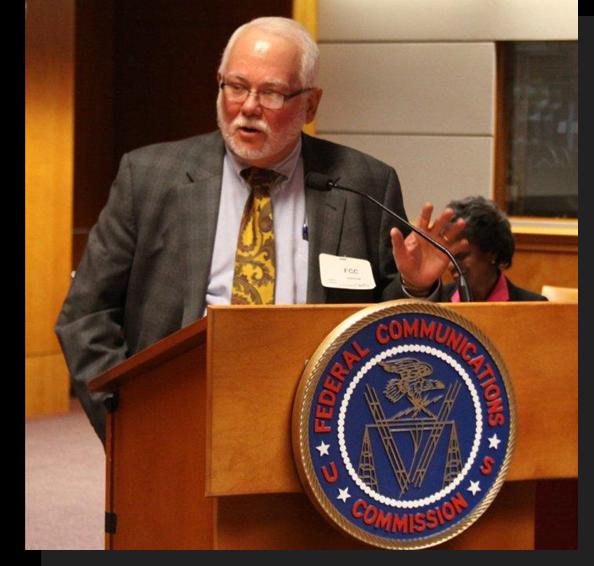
Commissioner Larry Landis, Indiana Public Service Commission

Giving welcoming remarks